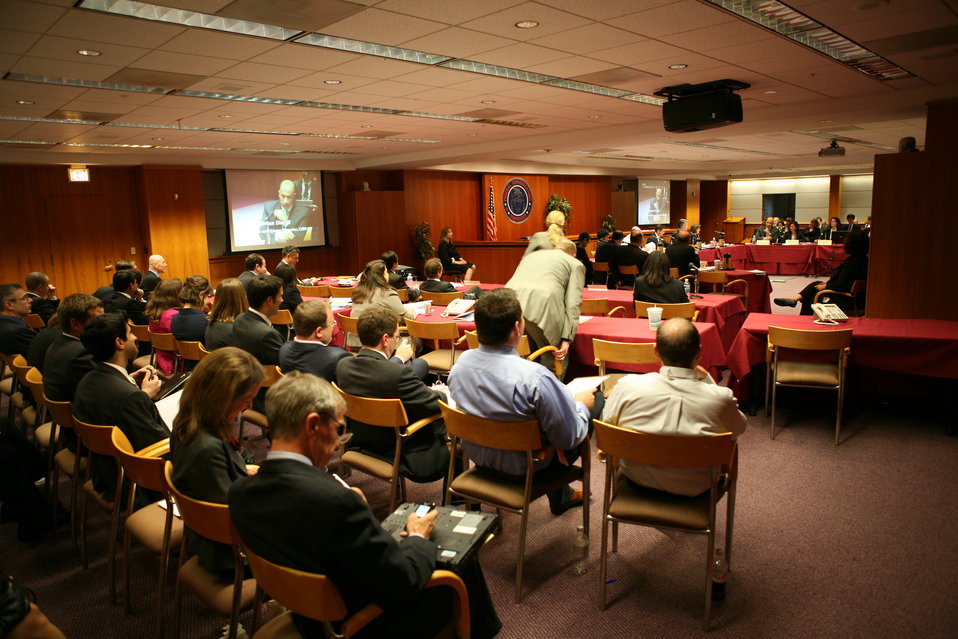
Midterm Review13

Broadband Midterm Review, 9-29-09